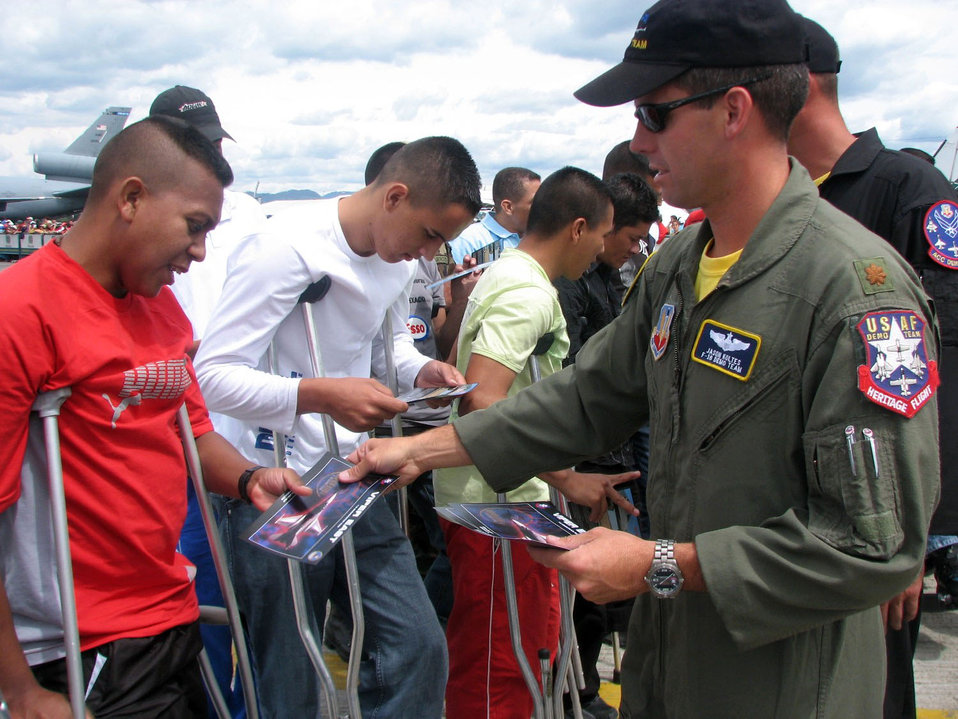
Spreading goodwill

Maj. Jason Koltes hands out mementos to injured Columbian military veterans on Sunday, July 2. Major Koltes is the commander and a pilot for the F-16 Fighting Falcon Viper East aerial demonstration team. The team was in Colombia for the Rio Negro air show.